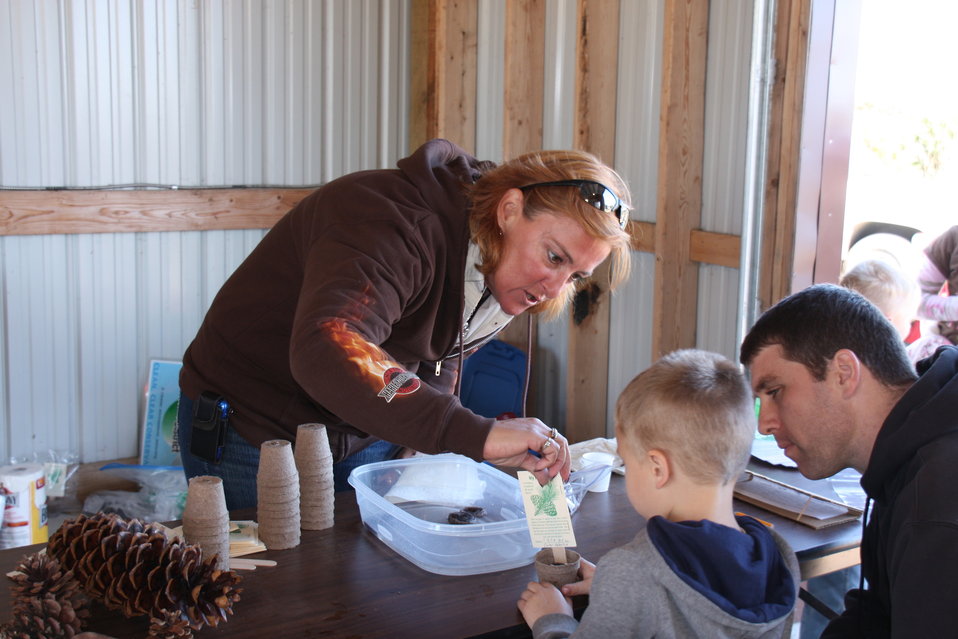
Prairie Fest

NRCS Booth